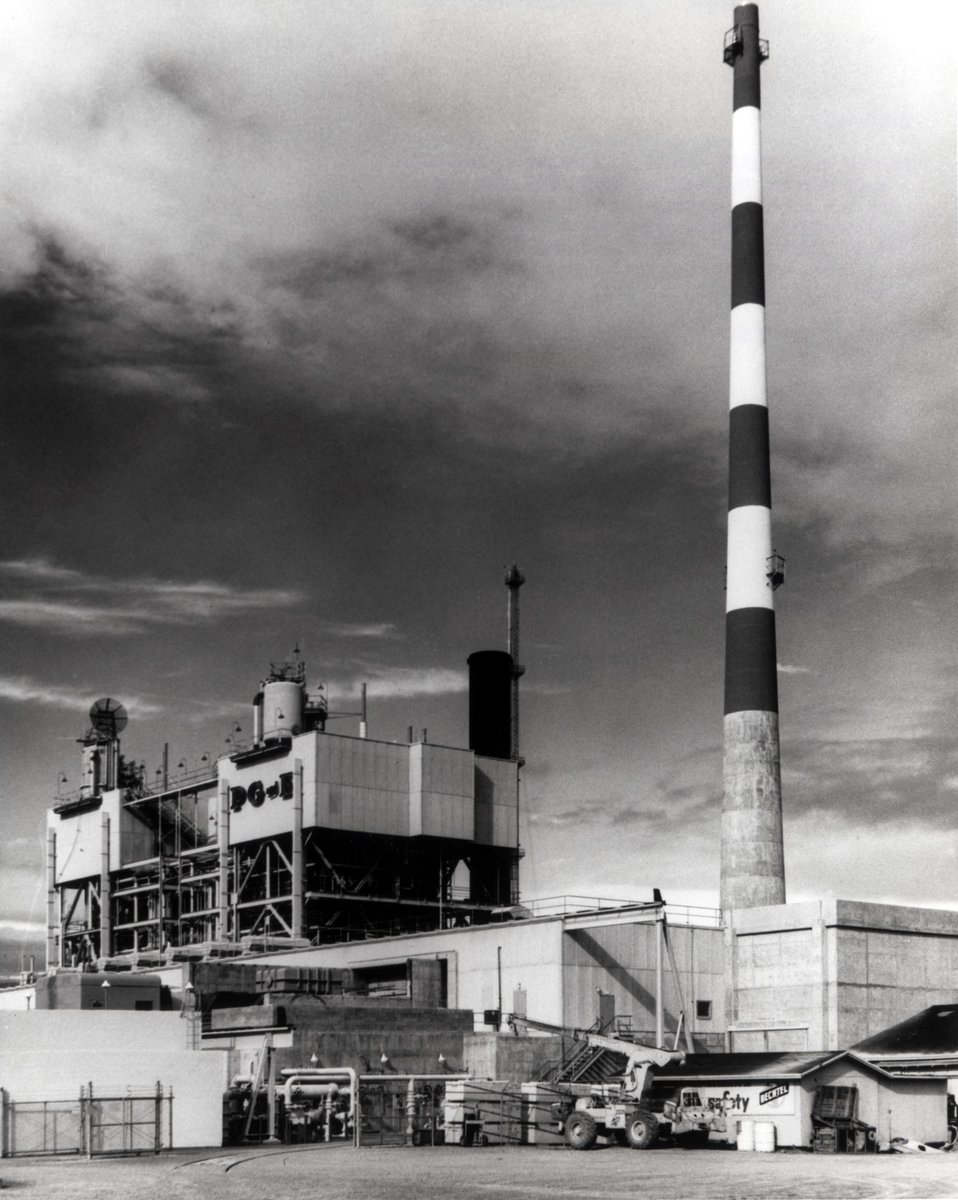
Humbolt Bay Nuclear Plant near Eureka, CA.